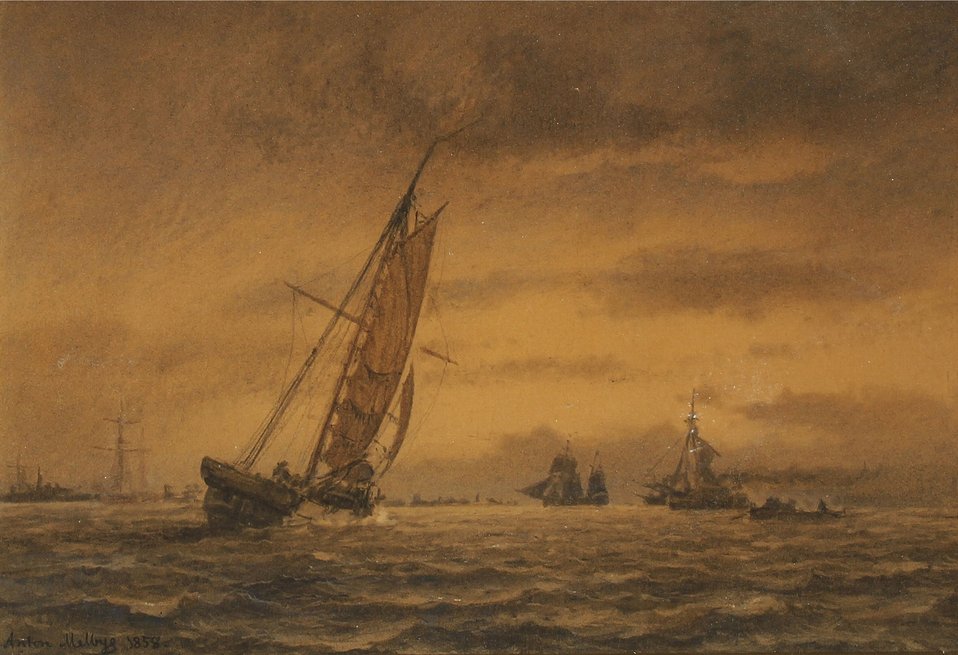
Anton Melbye - Talrige sejlskibe på havet